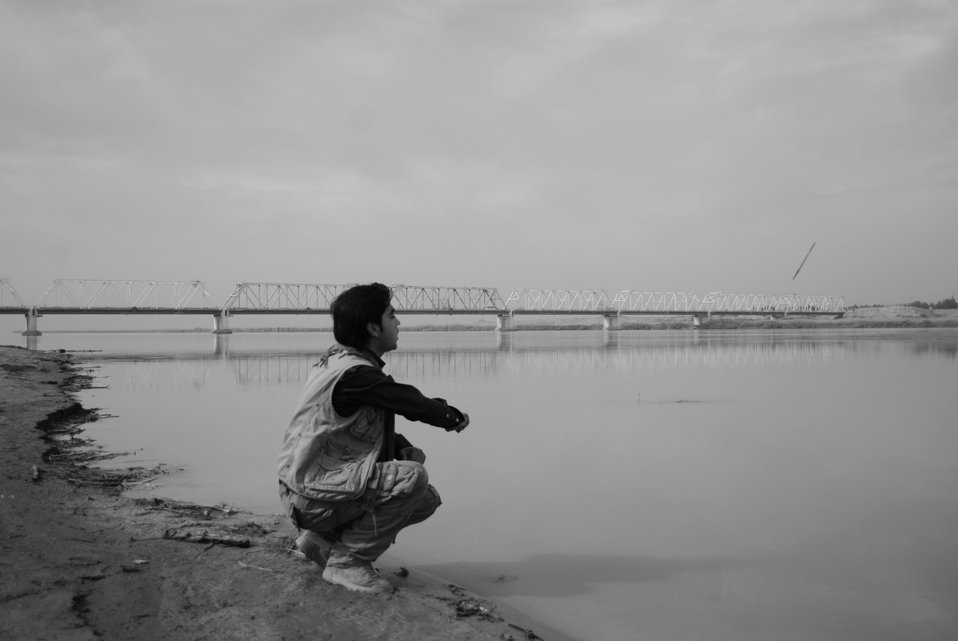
'On the Road' in Balkh Province